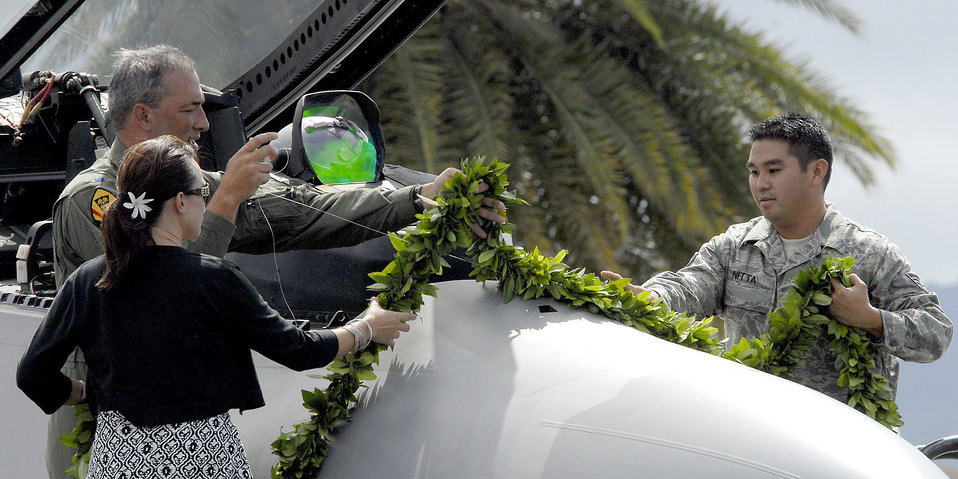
F-22 Raptors in Hawaii

Lt. Col. Chris Faurot with his wife and Staff Sgt. Ben Nitta drapes a maile lei across the nose of an F-22 Raptor during its arrival ceremony July 9, 2010, at Joint Base Pearl Harbor-Hickam, Hawaii. The F-22 represents an exponential leap in warfighting capabilities for U.S. forces in the Pacific.